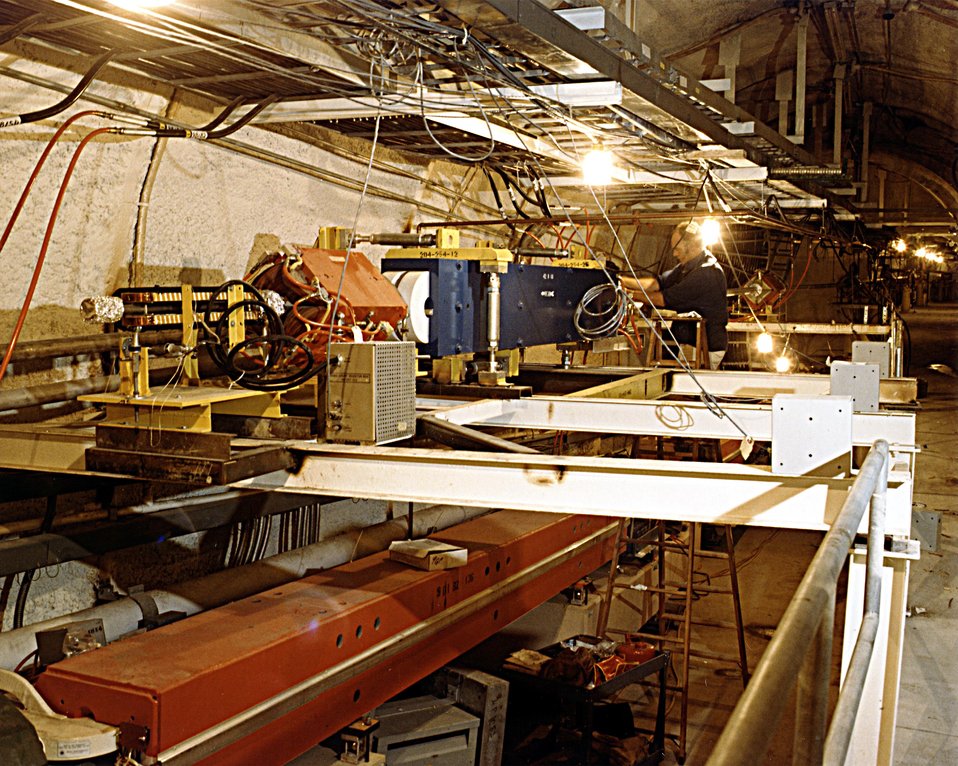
TECHNICIAN IS INSTALLING THE QUADRUPOLE AND BEND MAGNETS AT THE LOWER END OF THE NORTH INJECTION LINE.

THE POSITRON-ELECTRON PROJECT (PEP) IS A JOINT UNDERTAKING OF STANFORD LINEAR ACCELERATOR CENTER (SLAC) AND THE LAWRENCE BERKELEY LABORATORY (LBL). THE PEP MACHINE IS DESIGNED TO STORE BEAMS OF ELECTRONS AND POSITRONS CIRCULA- TING IN OPPOSITE DIRECTIONS AT SINGLE-BEAM ENERGIES BETWEEN 4 GEV AND 18 GEV. THE SOURCE OF THE BEAMS WILL BE THE PRESENT SLAC ACCELERATOR. THE COUNTER-ROTATING BEAMS OF ELECTRONS AND POSITRONS WILL COLLIDE WITH EACH OTHER AT SIX POINTS IN THE MACHINE. THESE COLLISION OR BEAM-INTERACTION POINTS WILL BE USED FOR HIGH-ENERGY PHYSICS EXPERIMENTS.